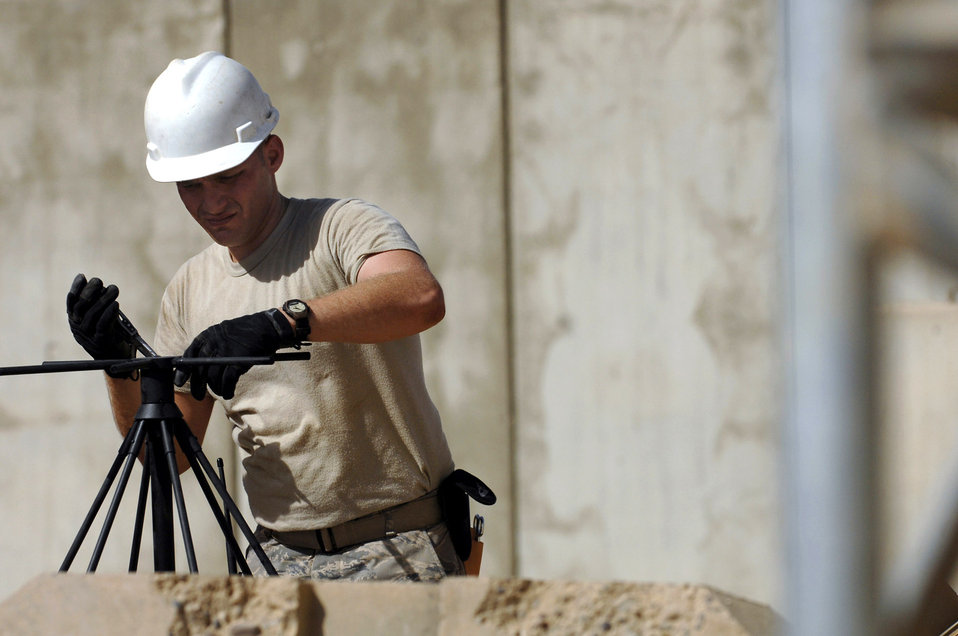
Radio up

Senior Airman Michael Lee pieces together a high-frequency radio used for line-of-sight tactical radio communications June 21 at Joint Base Balad, Iraq. The radio and new high-frequency antenna directly support ground operations for warfighters in Iraq. Airman Lee is a 332nd Expeditionary Communications Squadron ground radio maintainer deployed from Lajes Field, Azores.